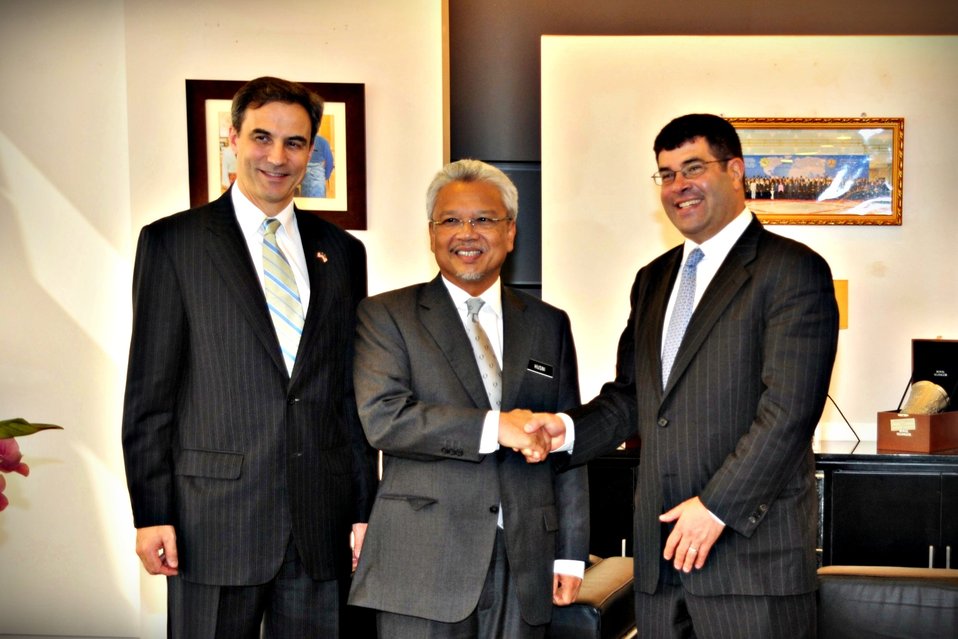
Deputy Secretary Wolin's Trip to the Pacific Rim

Deputy Secretary Neal Wolin held a bilateral meeting with Finance Minister II Dato' Seri Ahmad Husni Hanadzlah in Kuala Lampur, Malaysia on Wednesday, May 18, 2011. He was joined by Ambassador Paul W. Jones.